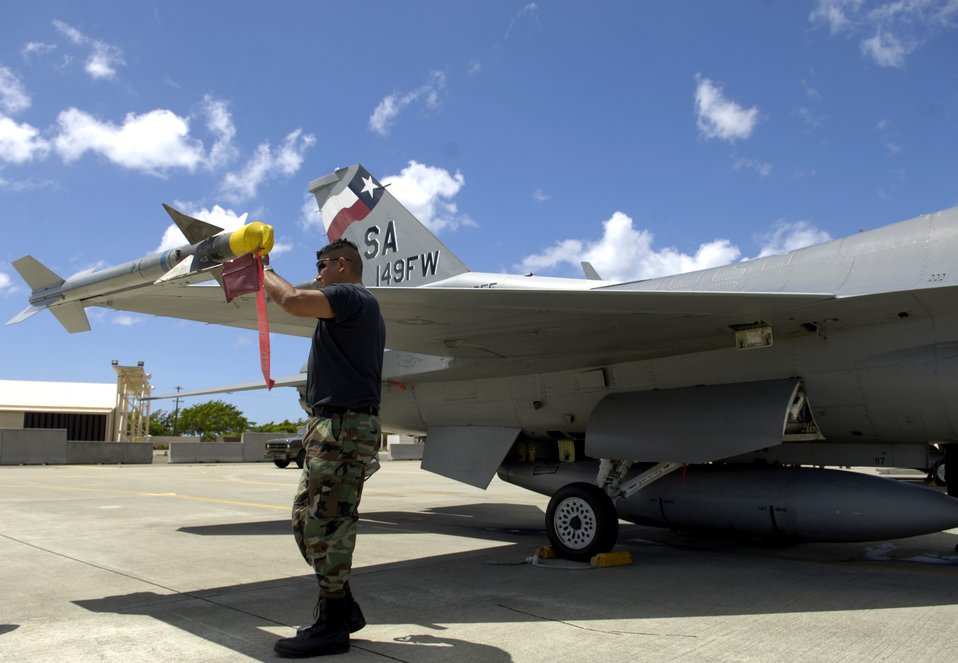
Eagles, Falcons face off in air exercise

Master Sgt. Carlos Rodriguez conducts a post-flight inspection on an F-16 Fighting Falcon at Hickam Air Force Base, Hawaii, Sept. 8 during Exercise Sentry Aloha. Sergeant Rodriguez is a crew chief with the Texas Air National Guard's 149th Fighter Wing.